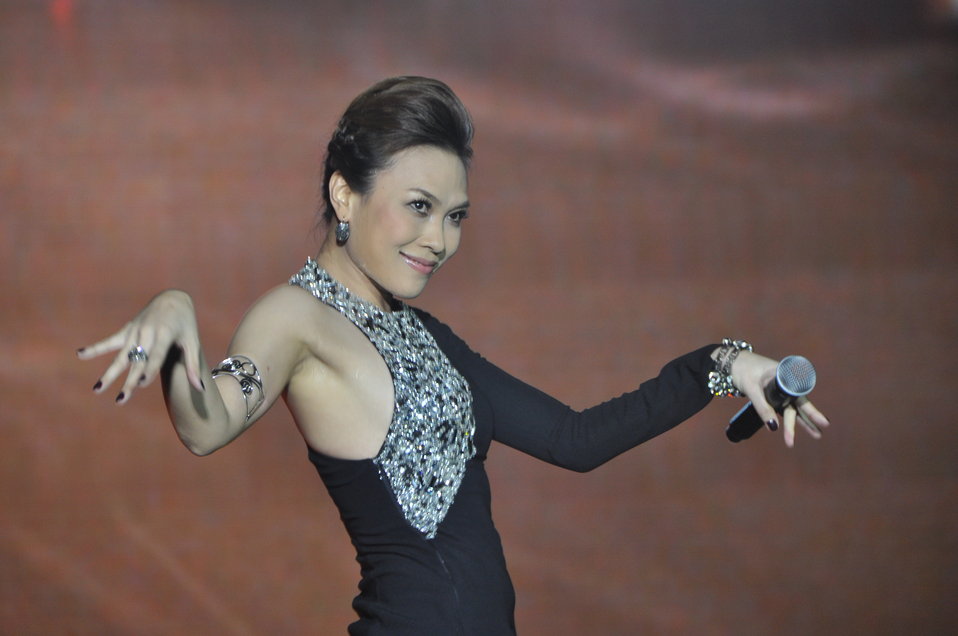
My Tam Performs at the MTV EXIT concert in Hanoi against human trafficking

USAID co-sponsors MTV EXIT concert, campaign against human trafficking